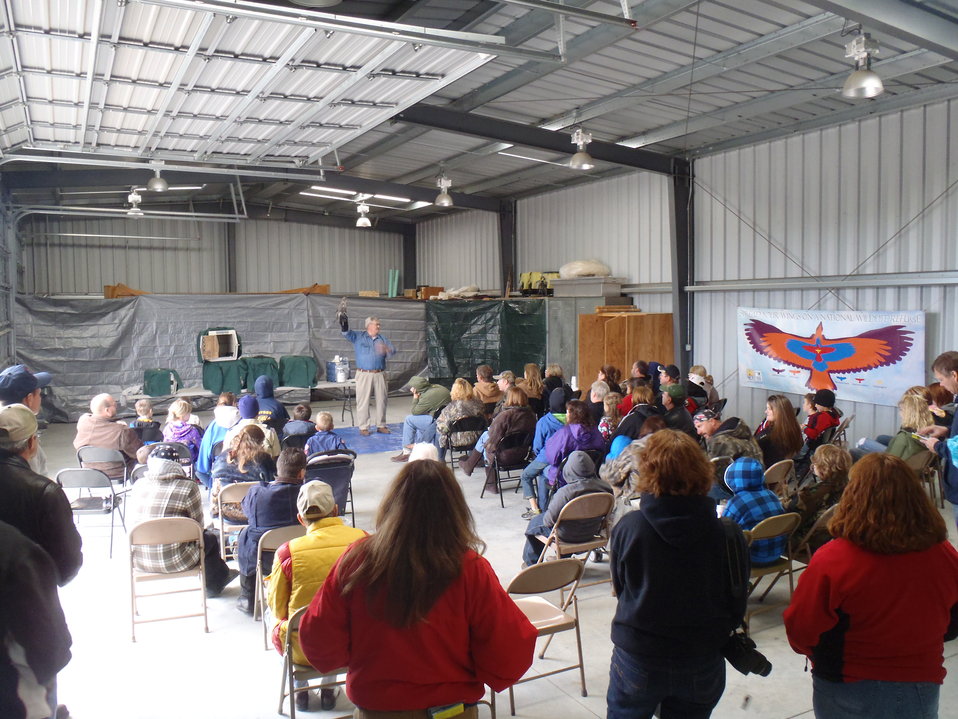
Live Bird Presentation By Operation Wildlife of Kansas